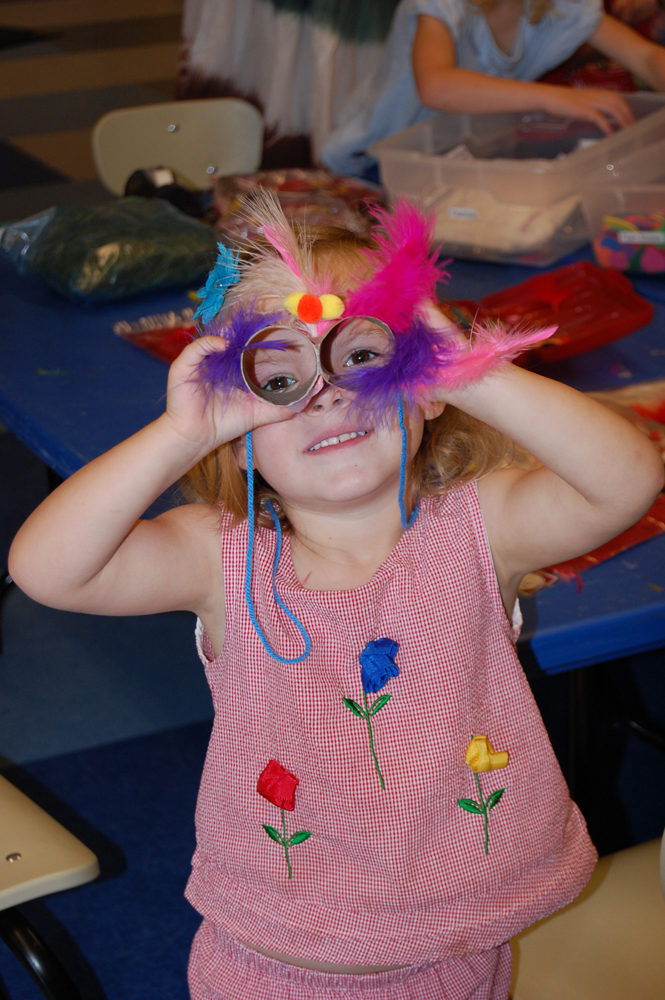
Sense of Wonder Camp

Sring 2009 session of the Sense of Wonder Camp, a camp for children ages 3-4 at Parker River National Wildlife Refuge.Credit: Kate Toniolo/USFWS